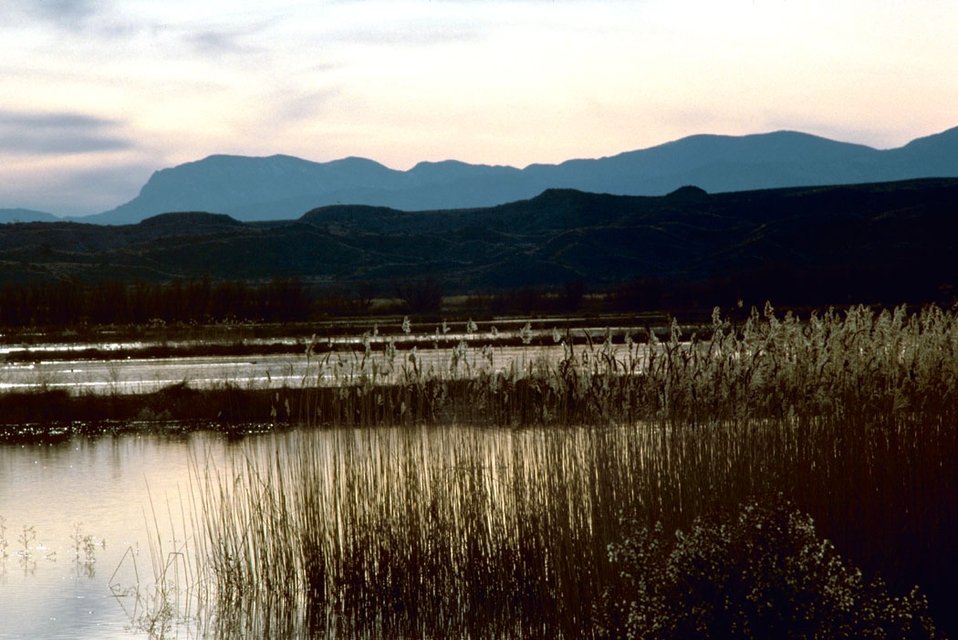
Bosque del Apache NWR sunset

Sunset at Bosque del Apache National Wildlife Refuge in New Mexico can be a time of wonder and serenity.